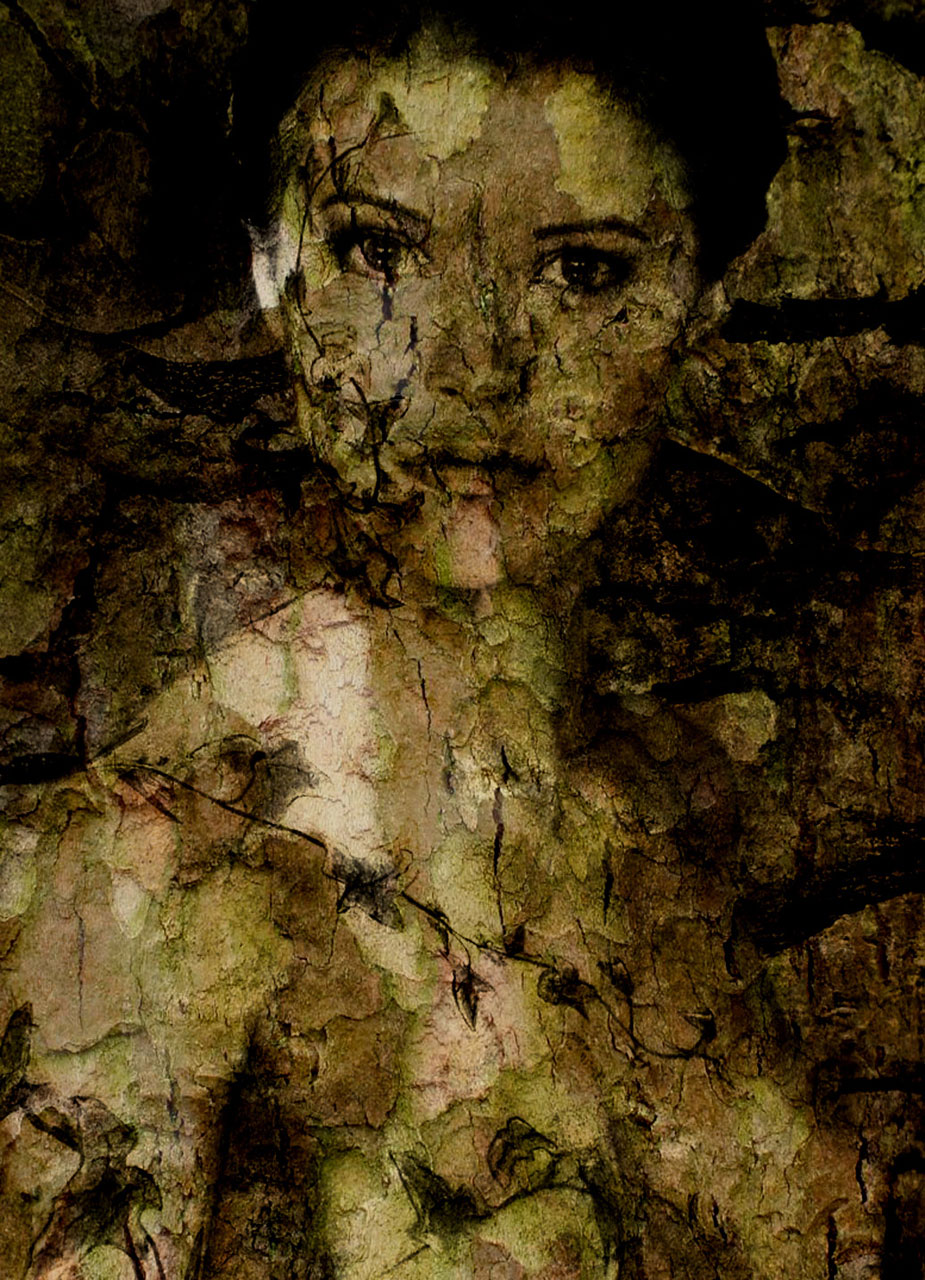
Decompose

Dark,lady,shadow,decay,tree,effects,gradient,mask,face,.